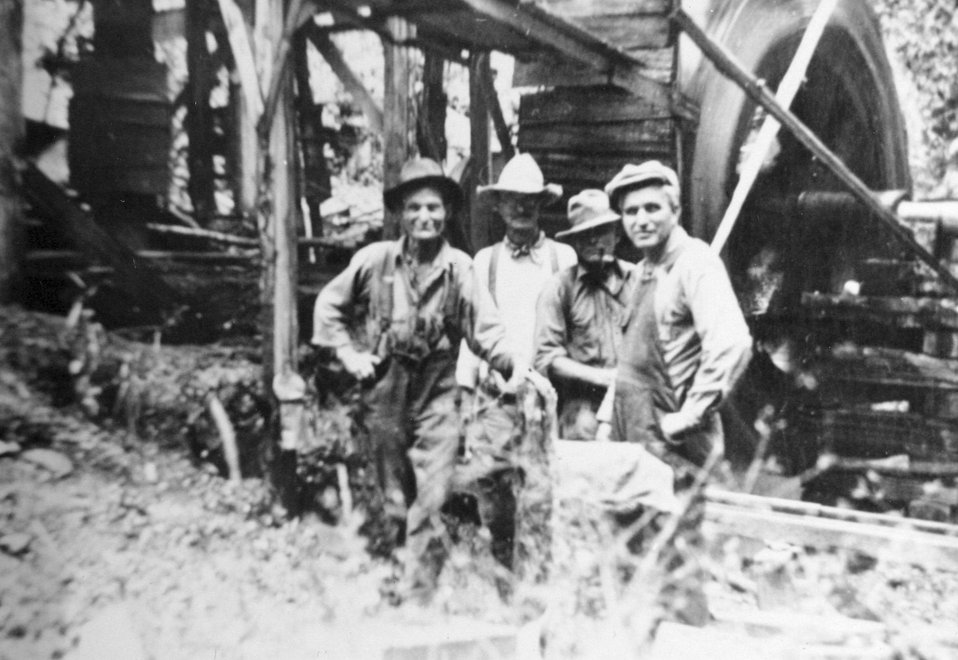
Mule Creek Arrastra West Fork of Mule Creek. (L R) Charlie Lewis, Slim Damon, Andy Huggins, Merle Alexander. Arrastra is used to grind gold bearing rock. Waterwheel turns a vertical spindle with arms that drag heavy stones over crushed ore spread on a circular bed of stones or concrete floor.